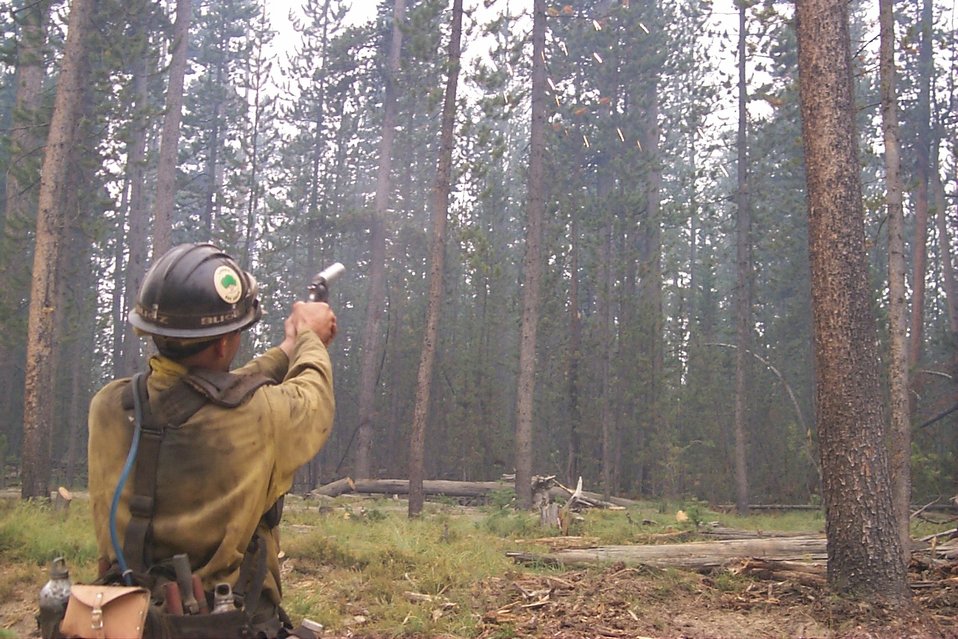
Controlled burn with a flare gun Fire Clearwater Fire Salmon Field Office USRD Upper Snake River District